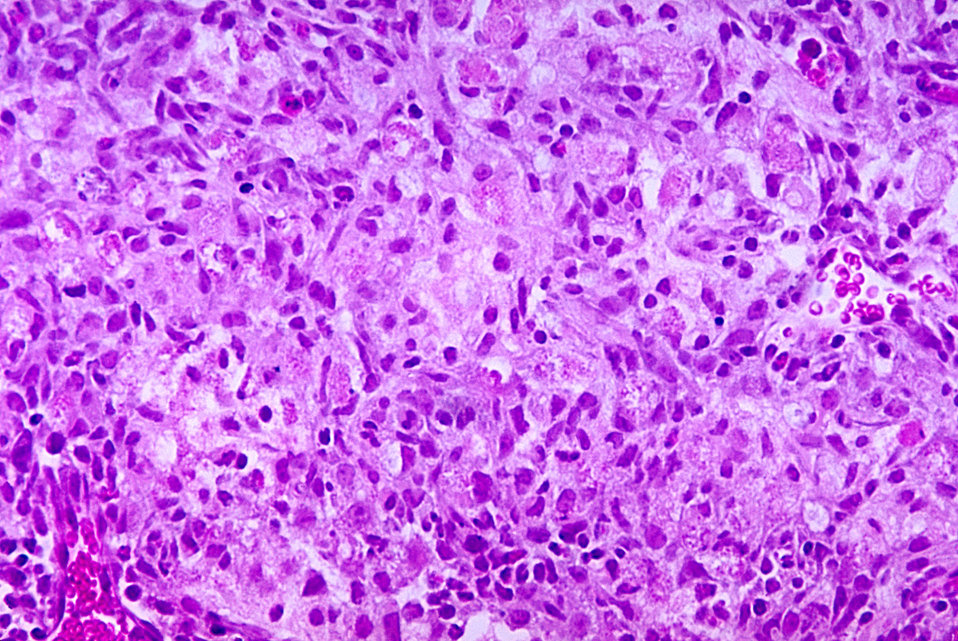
This photomicrograph reveals the histopathologic changes in a case of encephalitis due to the Tamiami virus.